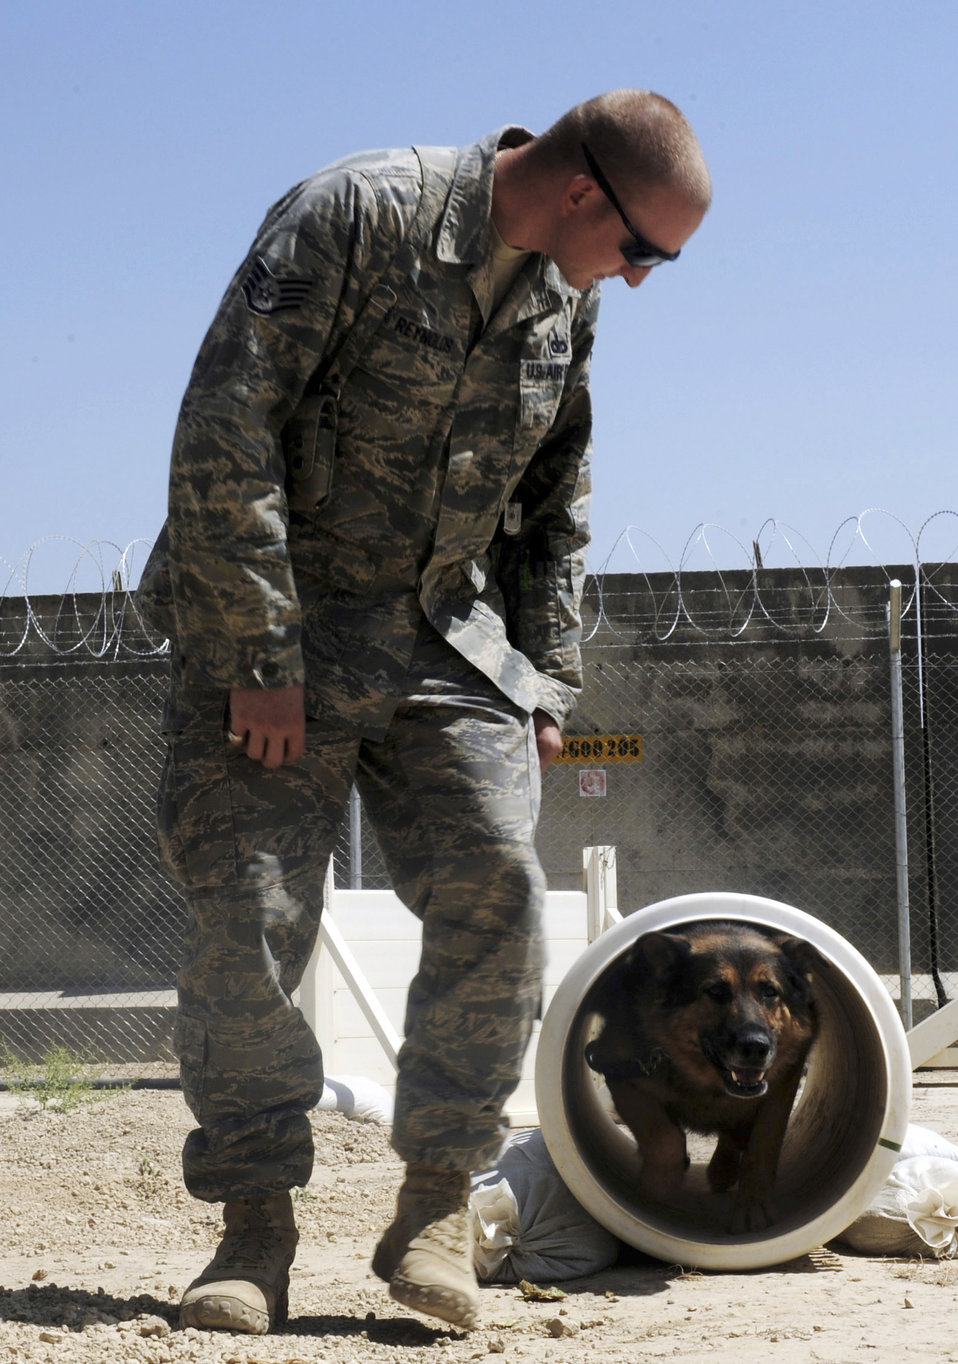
Dog days of summer

Staff Sgt. Chris Reynolds runs his German shepherd, Baiky, through a training obstacle course Aug. 7 at Bagram Airfield, Afghanistan. Sergeant Reynolds, an eight-year Air Force veteran, is a dog handler with the 455th Expeditionary Security Forces Squadron and is deployed from Vandenberg Air Force Base, Calif. He and his dog patrol the base and inspect mail, luggage and vehicles for narcotics.